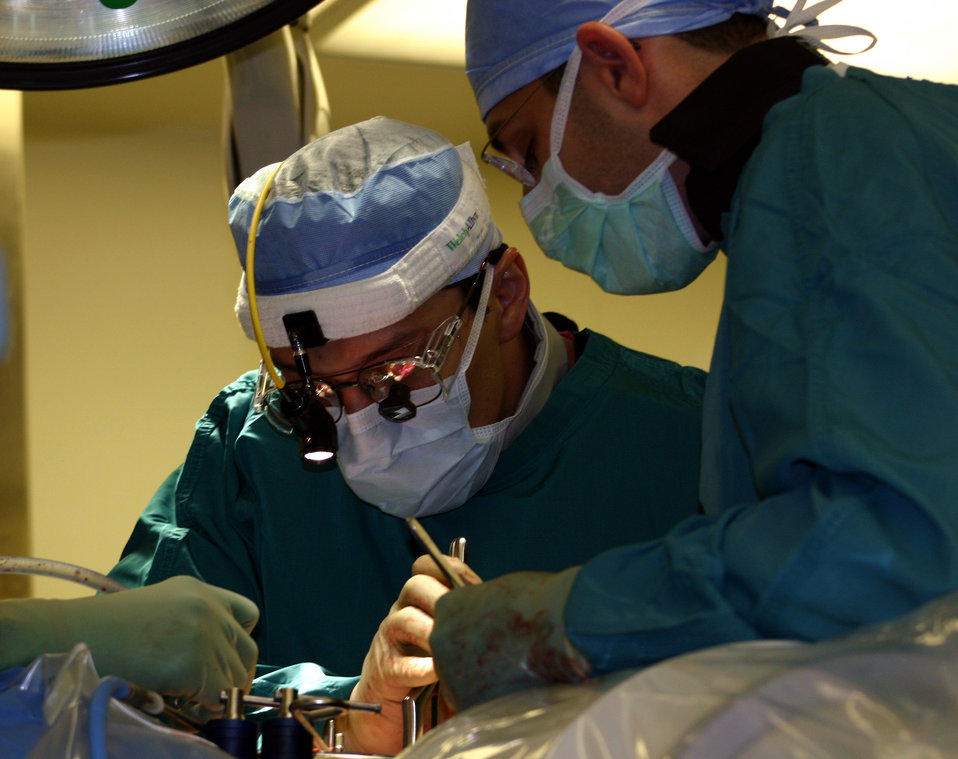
Air Force doctors perform alternative back surgery

LACKLAND AIR FORCE BASE, Texas -- (From left) Majs. (Drs.) Steven Cyr and Michael Peck ensure the abdominal area is ready for disc replacement here. Dr. Cyr is the orthopedic spine surgery chief at Wilford Hall Medical Center, and Dr. Peck is a general vascular surgeon with the 859th Surgical Operations Squadron.